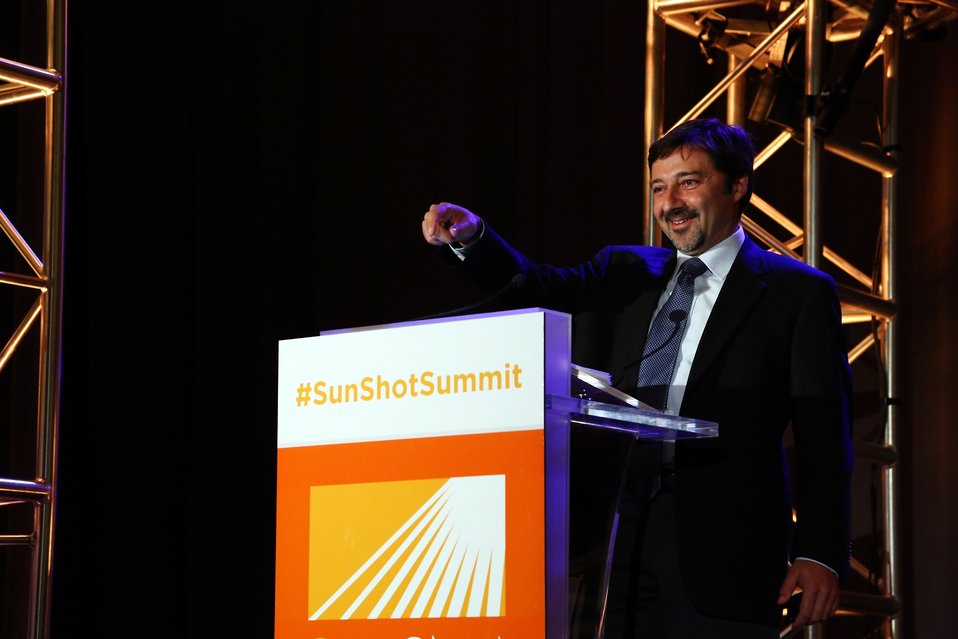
Day 2 Keynote Session 8

Raffi Garabedian, First Solar Chief Technology Officer, provides a keynote address.